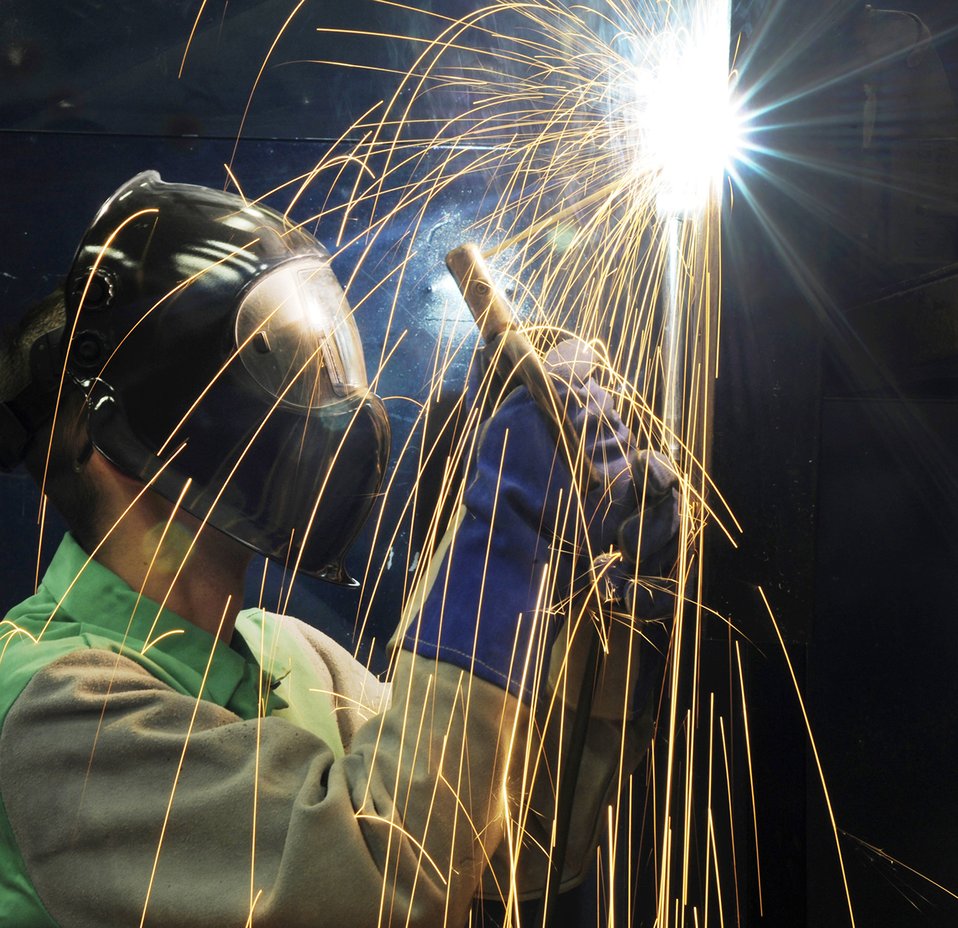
An illuminating arch

Airman 1st Class James Moreland welds a vertical arc at the Aircraft Metals Technology Shop March 30, 2010, on Joint Base Charleston, S.C. Airman Moreland is a metals technology apprentice with the 437th Maintenance Squadron.